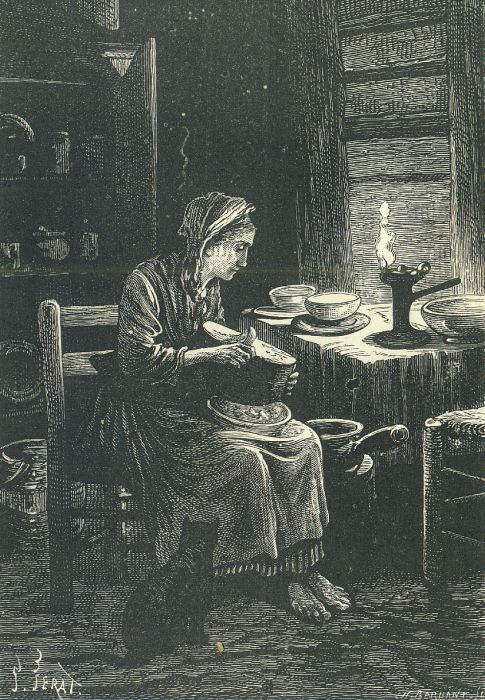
An illustration from the novel 'The Child of the Cavern' (alternative English titles for this novel include: Black Diamonds, Black Indies, Child of the Cavern, or Strange Doings Underground and The Underground City) by Jules Verne drawn by Jules Férat. Polski: Ilustracja powieści Juliusza Verne'a 'Czarne Indie' autorstwa Julesa Férata. Français : 'Les Indes noires', Jules Férat. Orginal description from the book: Français : Madge.